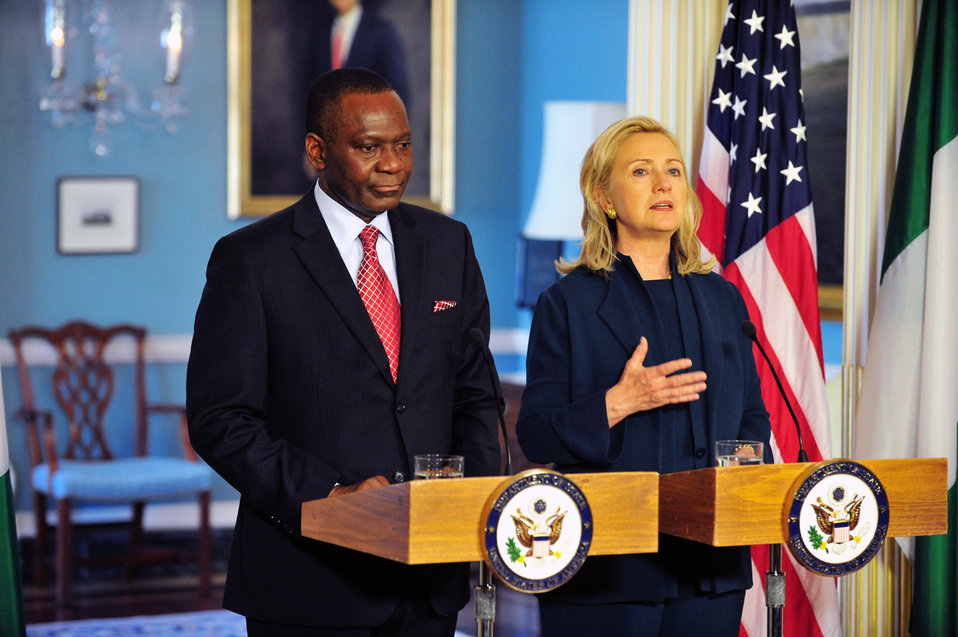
Secretary Clinton and Nigerian Foreign Minister Ashiru Respond to Questions

U.S. Secretary of State Hillary Rodham Clinton and Nigerian Foreign Minister Olugbenga Ashiru respond to questions during their joint press conference at the U.S. Department of State in Washington, D.C., in September 29, 2011.